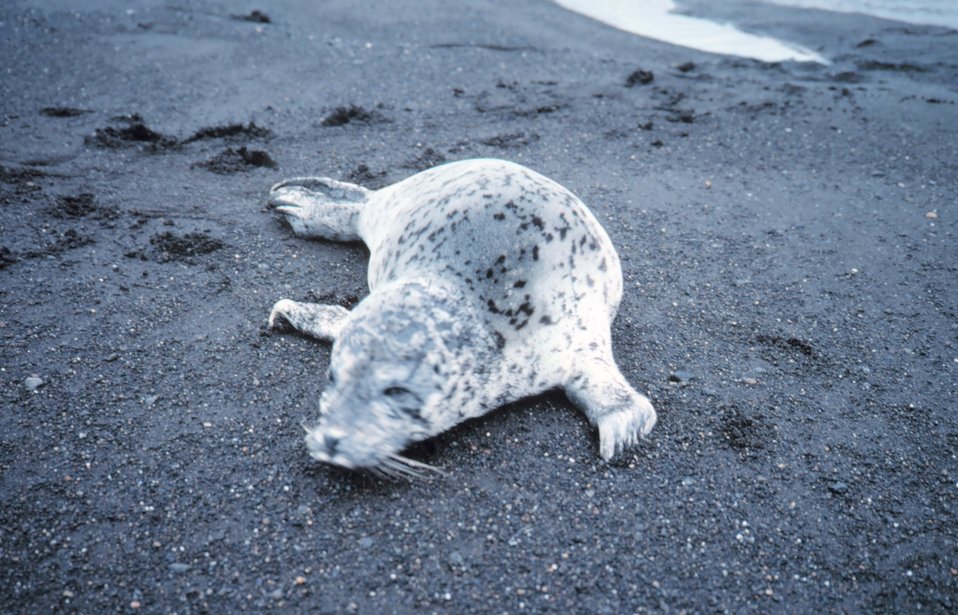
Spotted seal (Phoca largha) on a black sand beach.